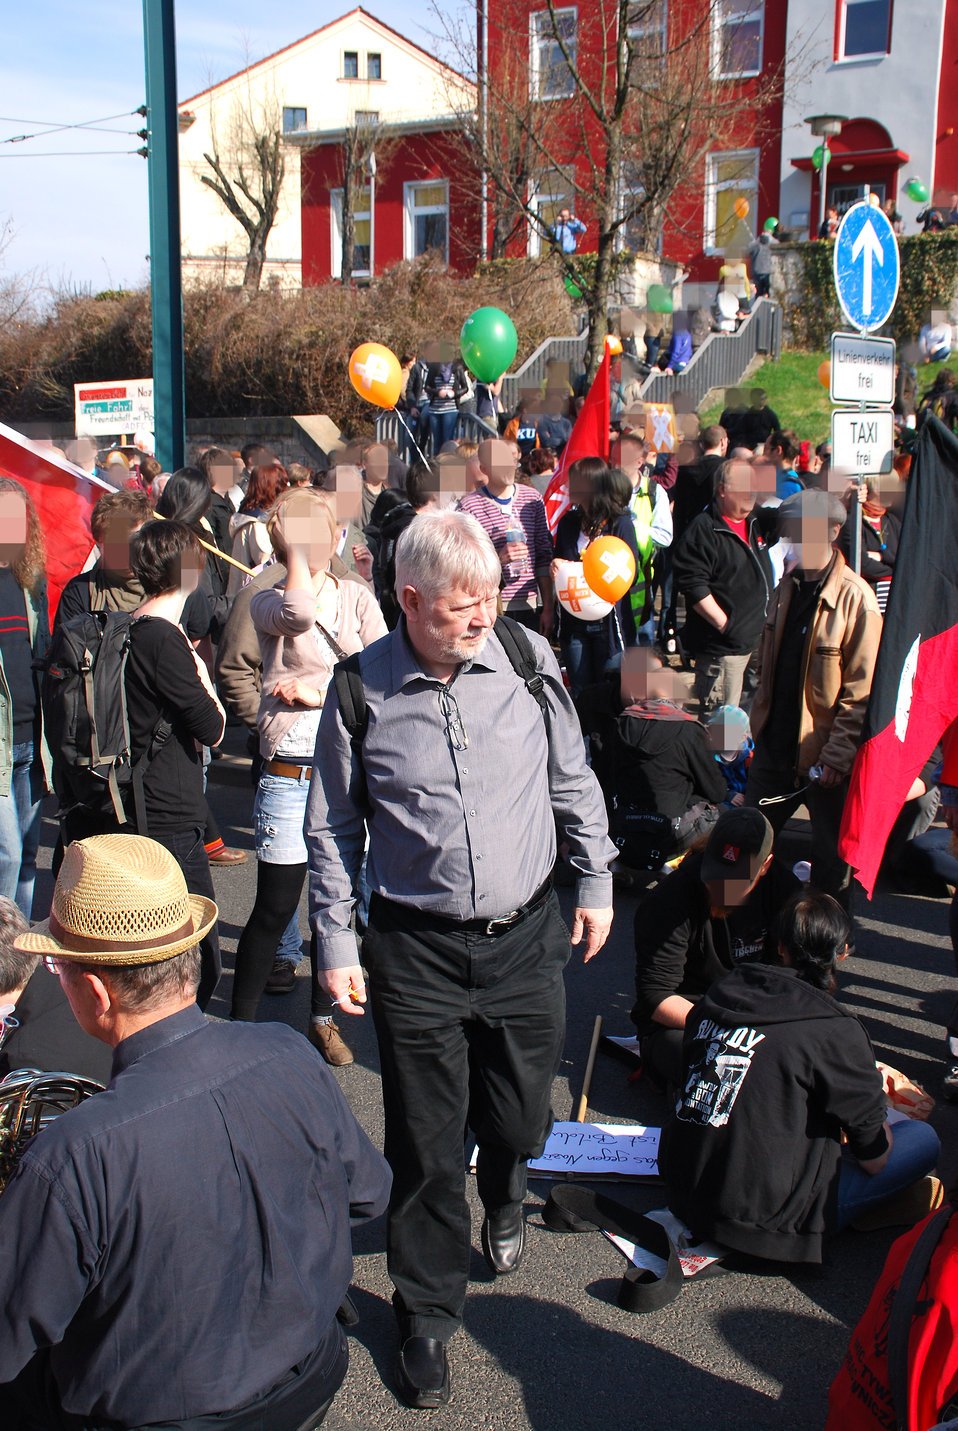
Proteste gegen den Nazi-Aufmarsch am 24.3.2012 in Frankfurt (Oder), mit Helmuth Markov, Finanzminister des Landes Brandenburg